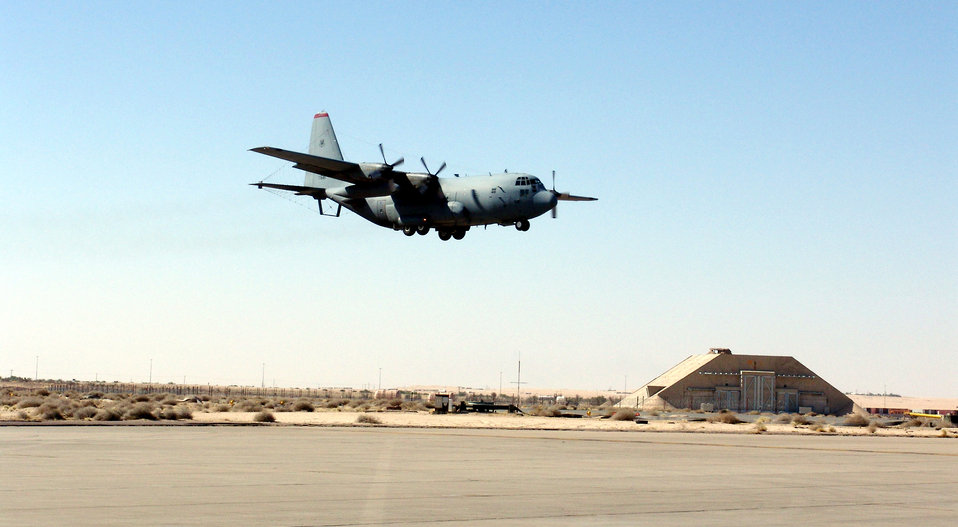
Sending a Compass Call

SOUTHWEST ASIA -- An EC-130H Compass Call aircraft lands at a forward-deployed location June 29. Equipment on this modified C-130 prevents or degrades enemy communications. The aircraft and crew are from the 43rd Expeditionary Electronic Combat Squadron and deployed from Davis-Monthan Air Force Base, Ariz.